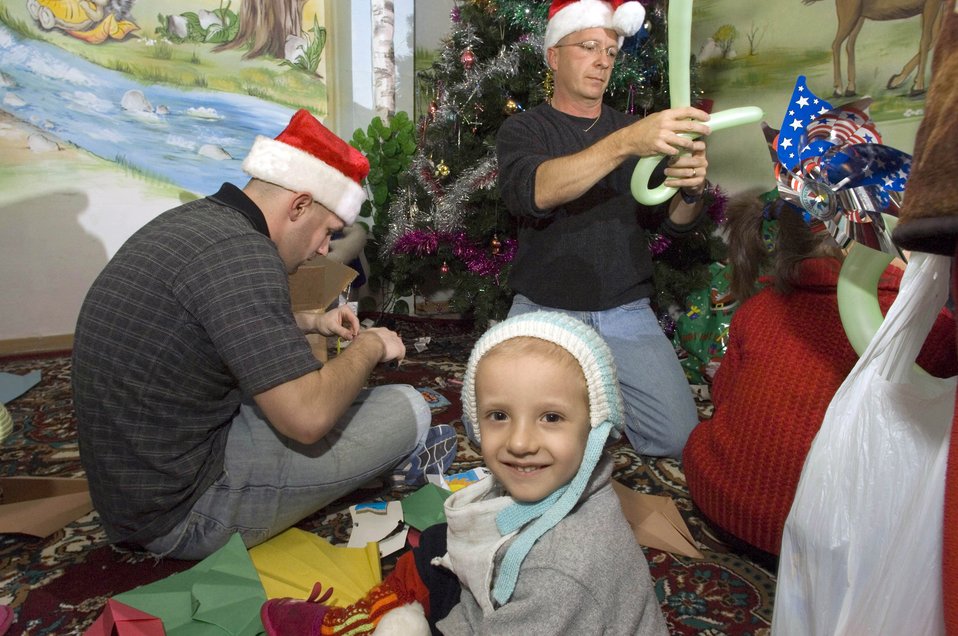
Manas Christmas

BISHKEK, Kyrgyzstan (AFPN) -- A boy waits as Airman 1st Class William Kretsch (left) and Master Sgt. Dan Cline shape balloons. The Airmen are visiting the children's cancer ward at this hospital with the Manas Air Base Outreach Society spending some of their free time giving presents and singing